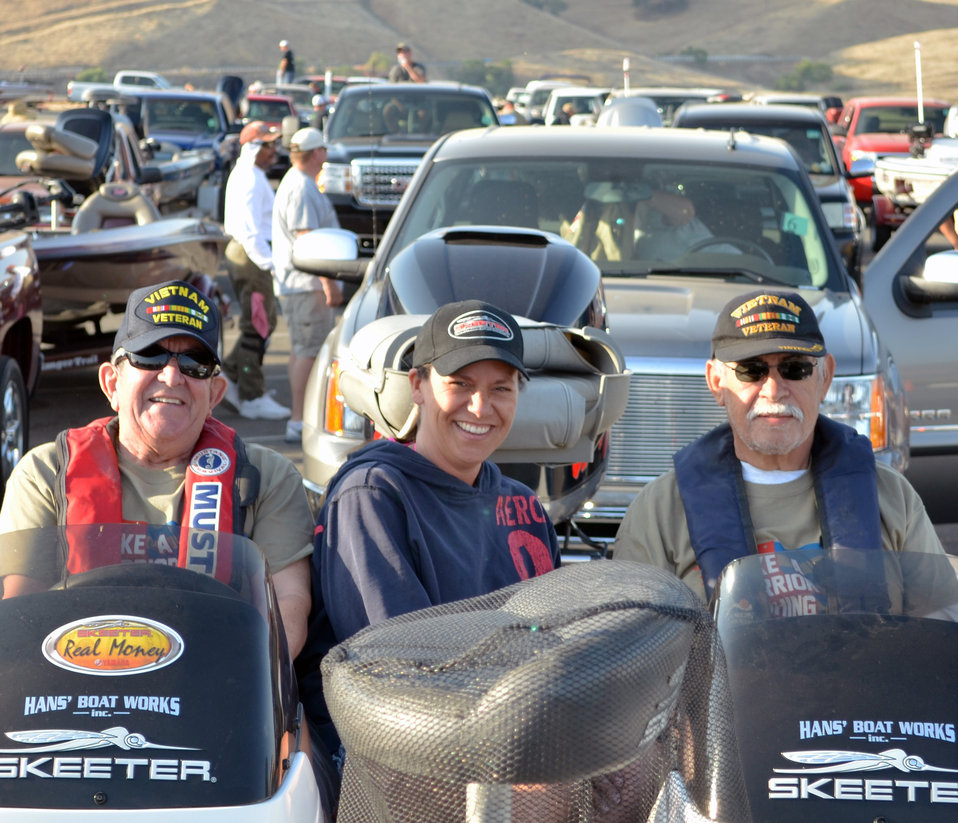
First boat in line (“Take a Warrior Fishing” event at Success Lake)

Wounded warriors and their families enjoy a day fishing during the 'Take a Warrior Fishing' event at Success Lake, located near Porterville, Calif., May 4, 2013. This is the second year the U.S. Army Corps of Engineers Sacramento District has hosted the event. Photo cropped for emphasis.